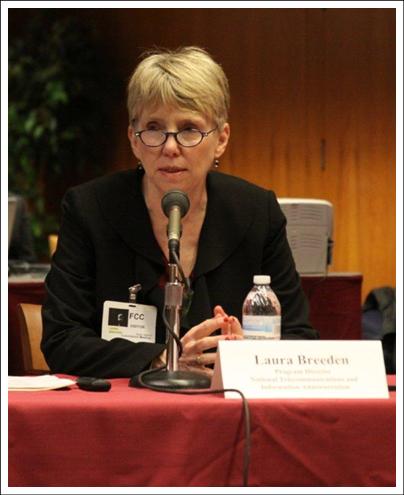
Laura Breeden, Moderator

Panel 3: Discussion of Best Practices Learned from Implementing Broadband Adoption Programs Within Different Communities